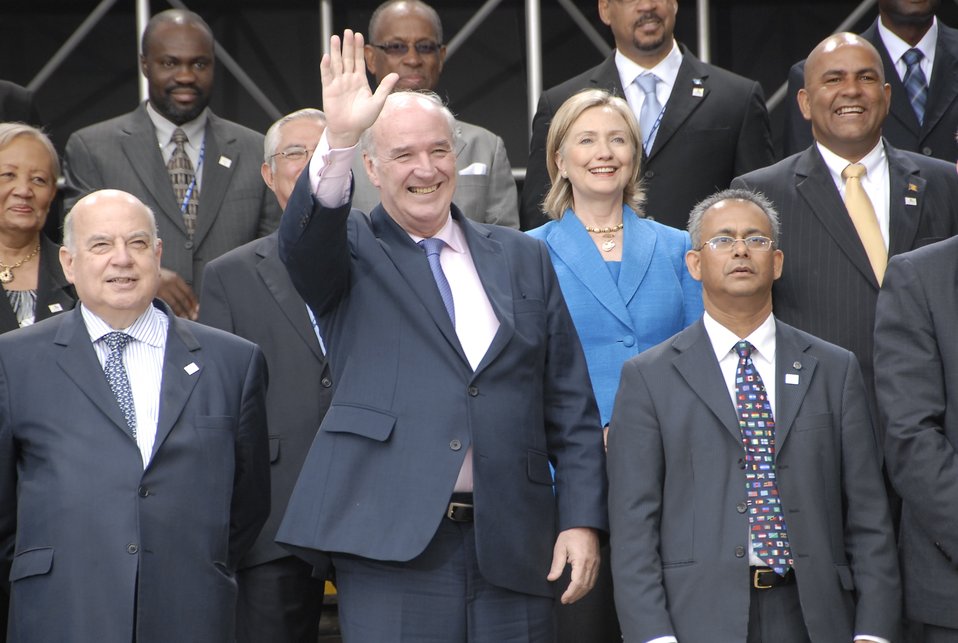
Secretary Clinton With OAS Ministers

U.S. Secretary of State Hillary Rodham Clinton, flanked by Peruvian Foreign Minister Jose Garcia Belaunde and Secretary General of the OAS Jose Miguel Insulza, poses for a photo with other ministers at the 40th General Assembly of the Organization of American States in Lima, Peru, on June 7, 2010.